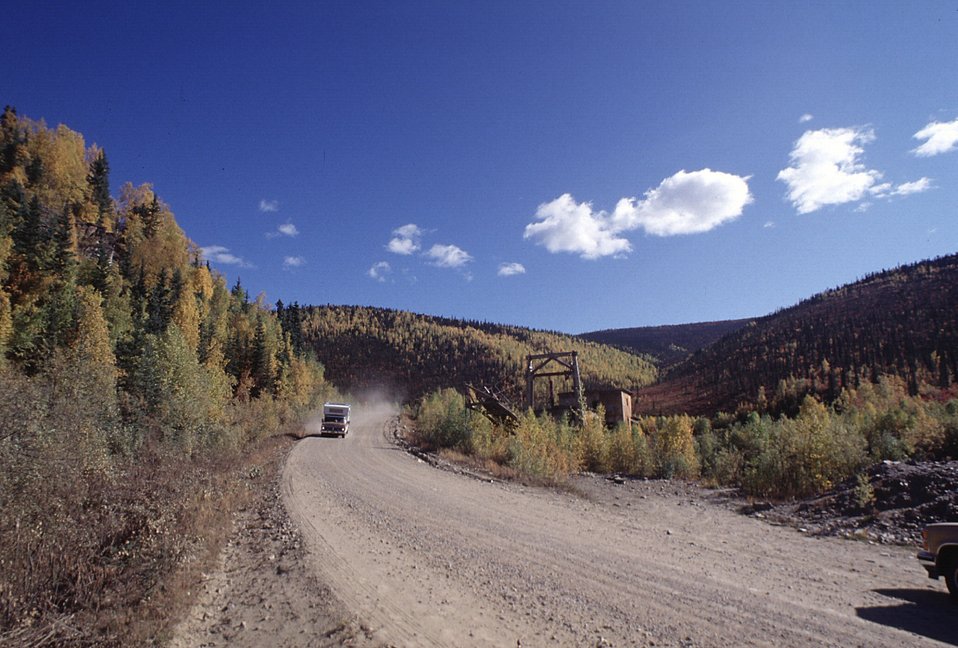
Fall colors along Taylor Highway near Jack Wade Dredge